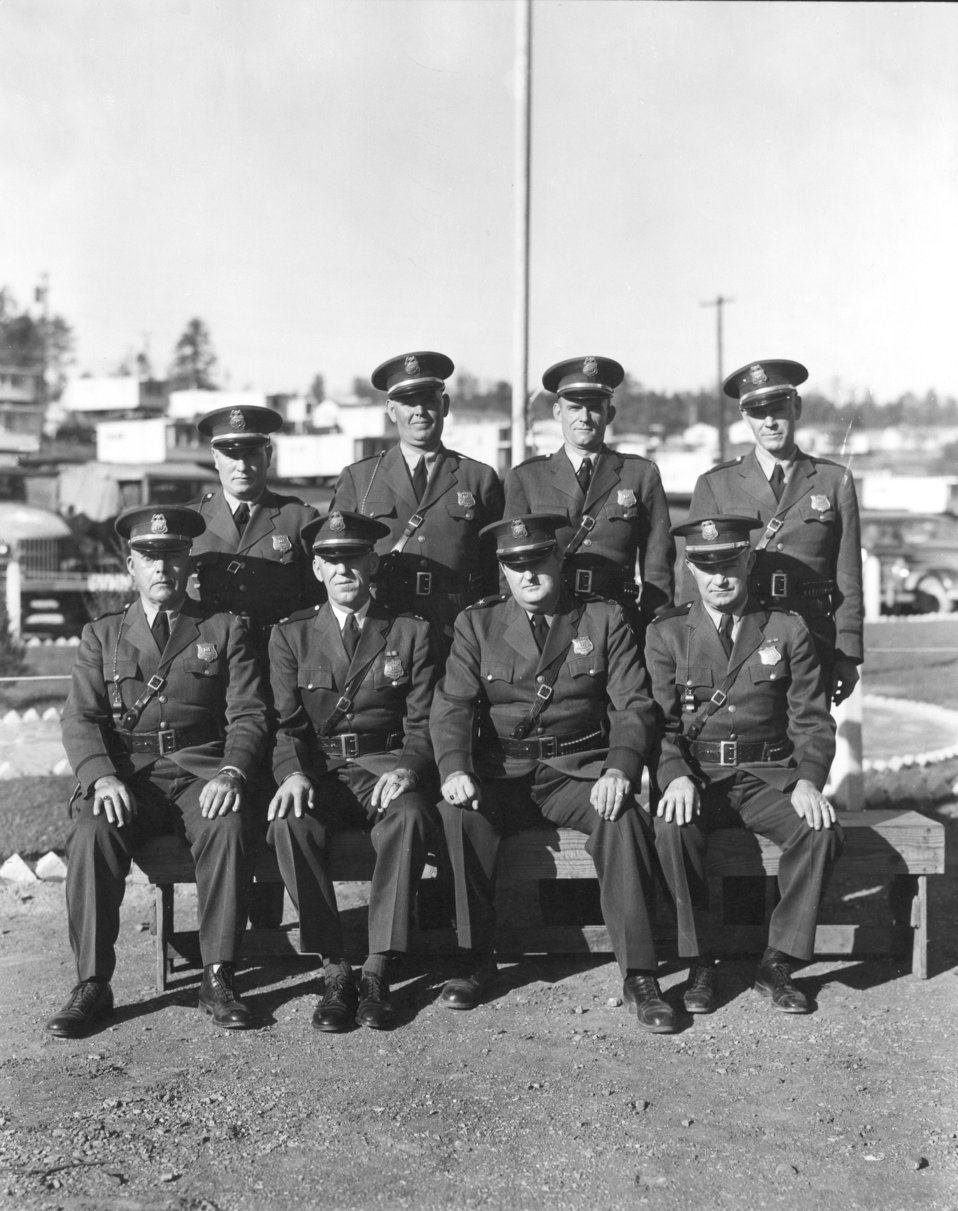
AEC Atomic Energy Commsion Patrol Officers Oak Ridge

s-343 DOE photo by Ed Westcott 1944 Oak Ridge Tennessee